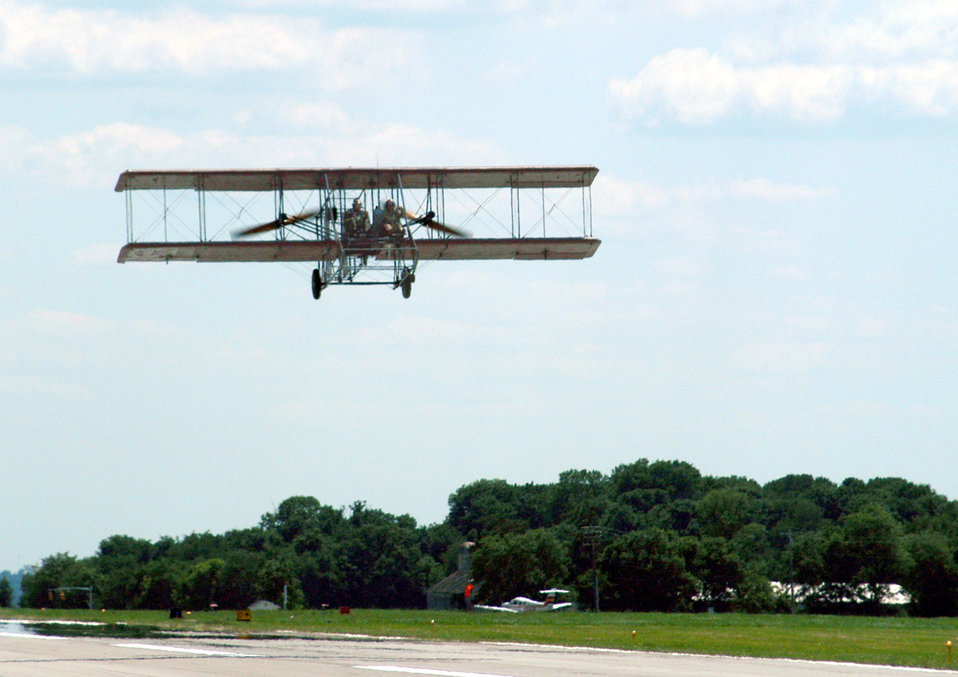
The flying machine

DAYTON, Ohio (AFPN) -- Gen. John P. Jumper, Air Force chief of staff, and pilot John Warlick fly the Wright B Flyer at Dayton Wright Brothers Airport, Ohio, on June 21. Like the first flight of the Wright brothers in 1903, Warlick and Jumper's air trip was less than one minute. Jumper was here to speak at the Order of the Daedalians national convention.